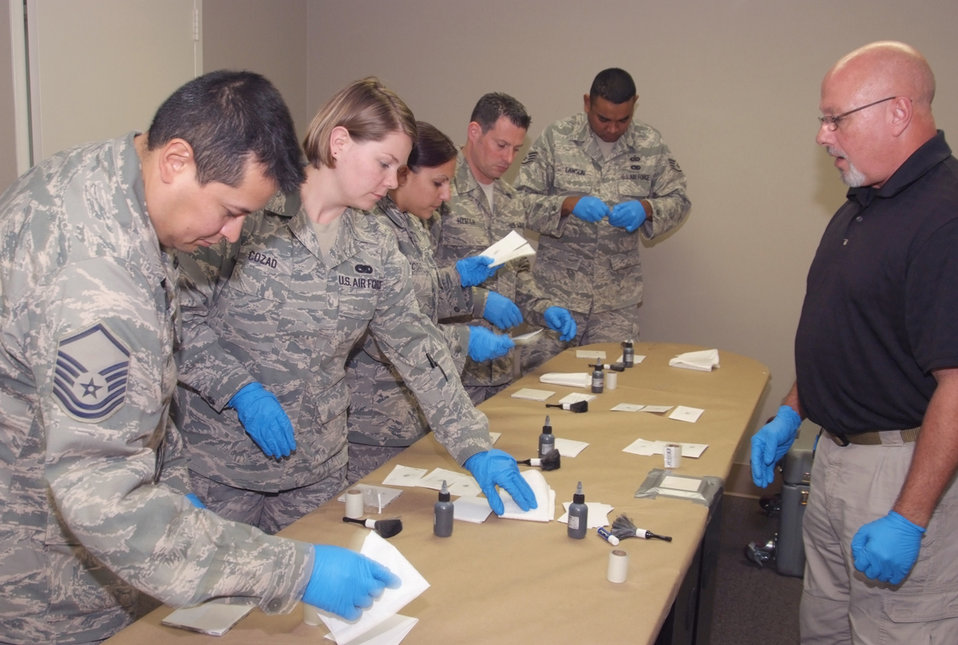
Battlefield Forensics Course 2010

An instructor with Six3 Systems Inc. helps 4th Combat Camera Airmen as they practice fingerprinting techniques during a battlefield forensics course at March Air Reserve Base, Calif.